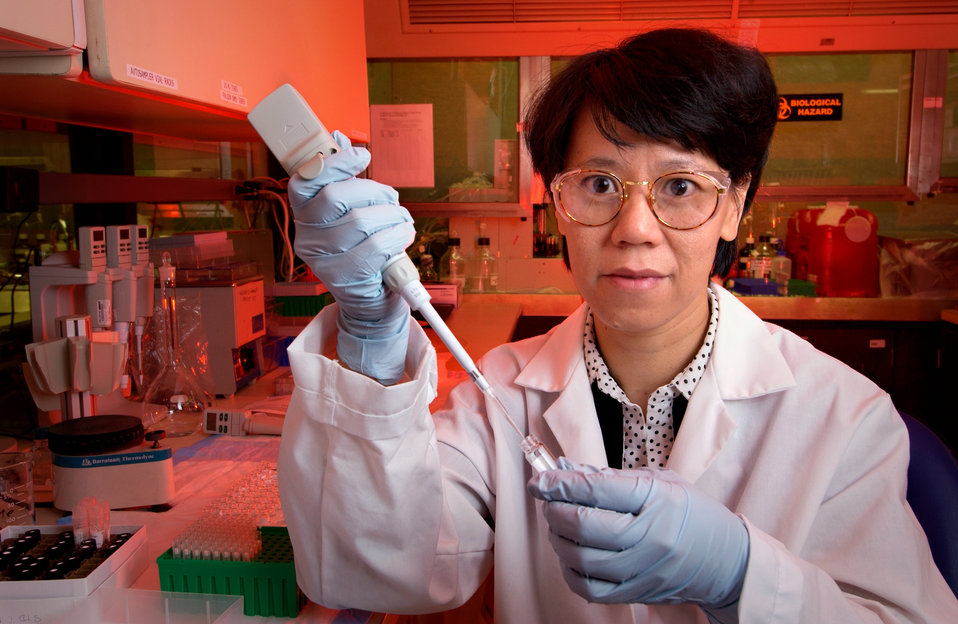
This 2004 photograph showed Xiaoyun (Sherry) Ye, a CDC laboratorian, pipetting specimens for analysis in the CDC's Personal Care Products Laboratory (PCPL) located in a CDC lab on the organization's Chamblee, Georgia campus.